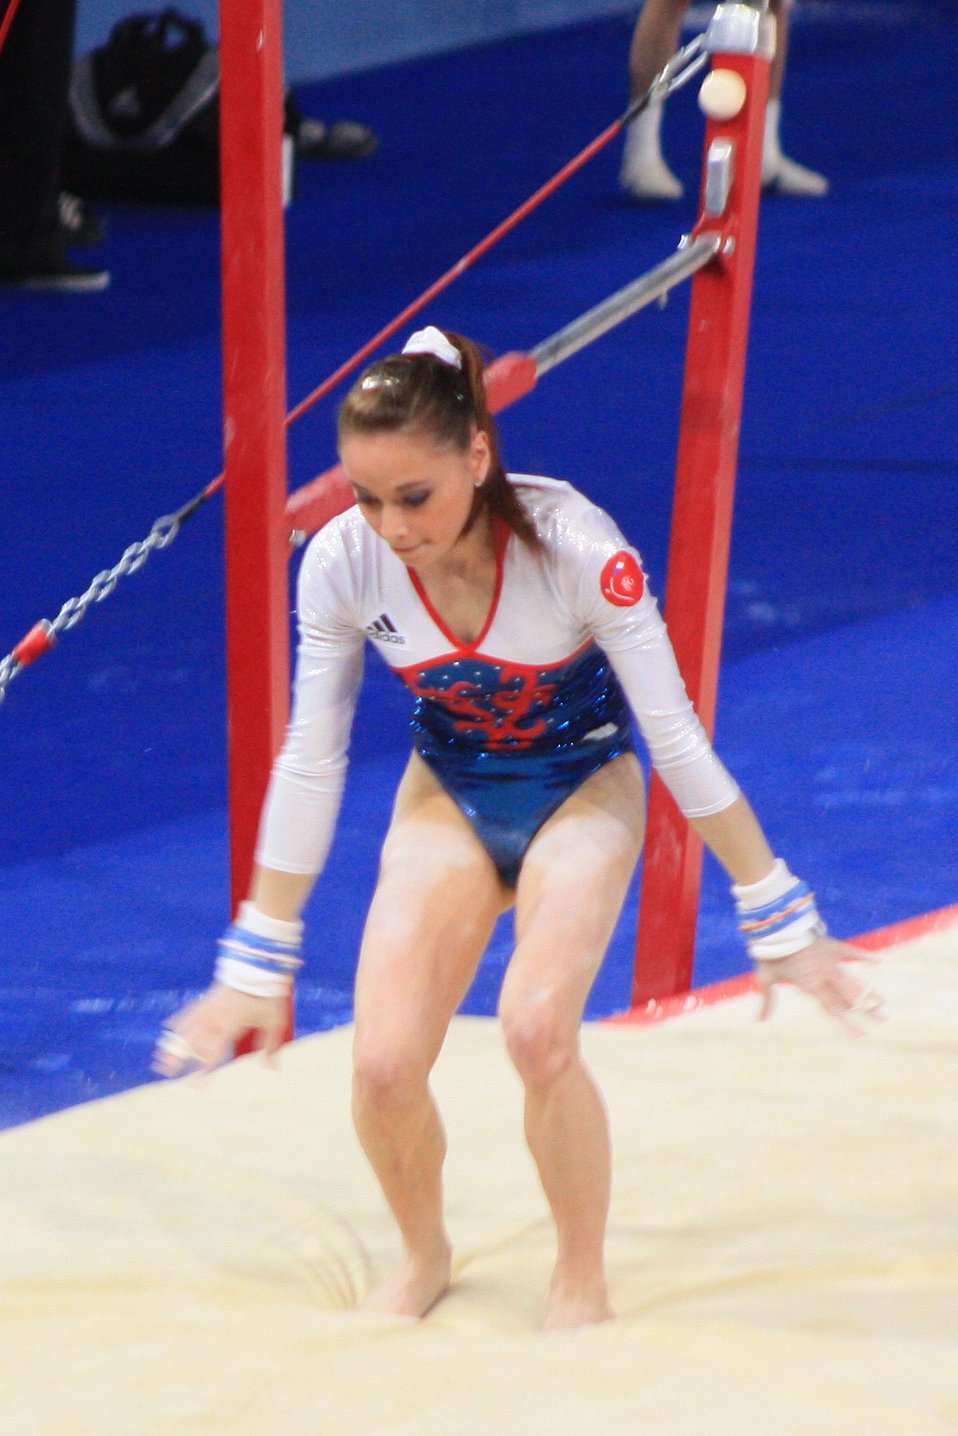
Fran√ßais†: Pauline Morel en r√©ception lors de son passage en qualifications des barres asym√©triques aux Internationaux de France (2010).